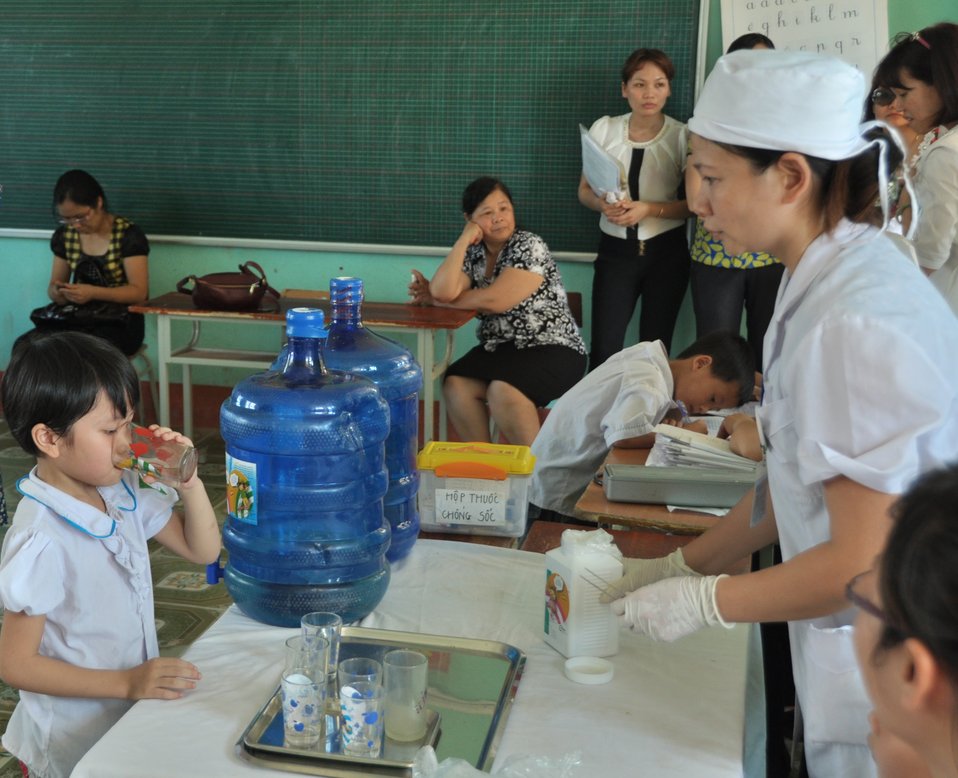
USAID supports deworming education and medication distribution in Bac Giang Province

May 20, 2013